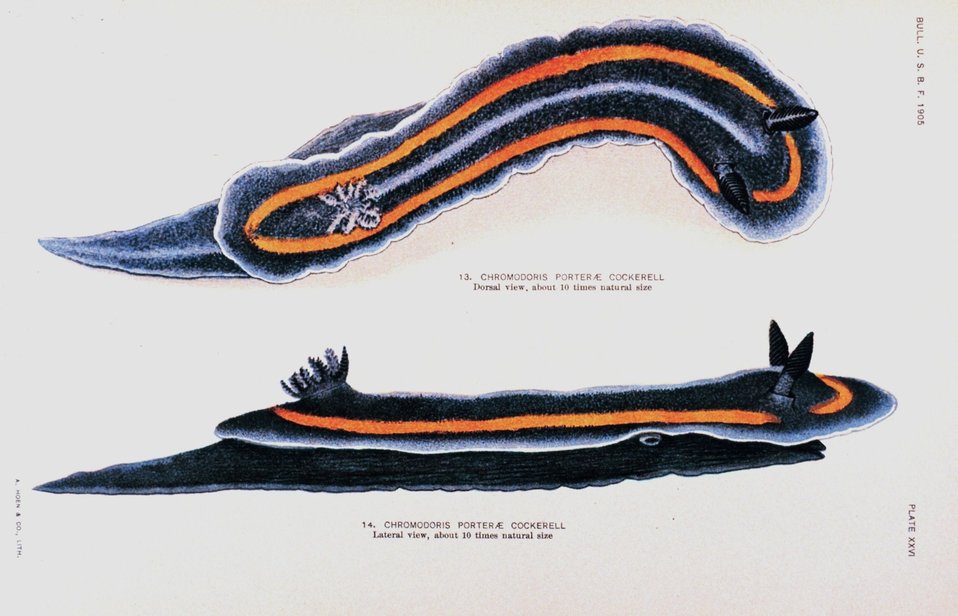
Nudibranchs. 13. Chromodoris porterae Cockerell - Dorsal view. 14. Chromodoris porterae Cockerell - Lateral view. Views painted by Anna B. Nash of the Hopkins Seaside Laboratory. In: 'Opisthobranchiate Mollusca from Monterey Bay ....', Bulletin of the Bureau of Fisheries, Volume 25, 1905. P. 151, Plate XXVI.